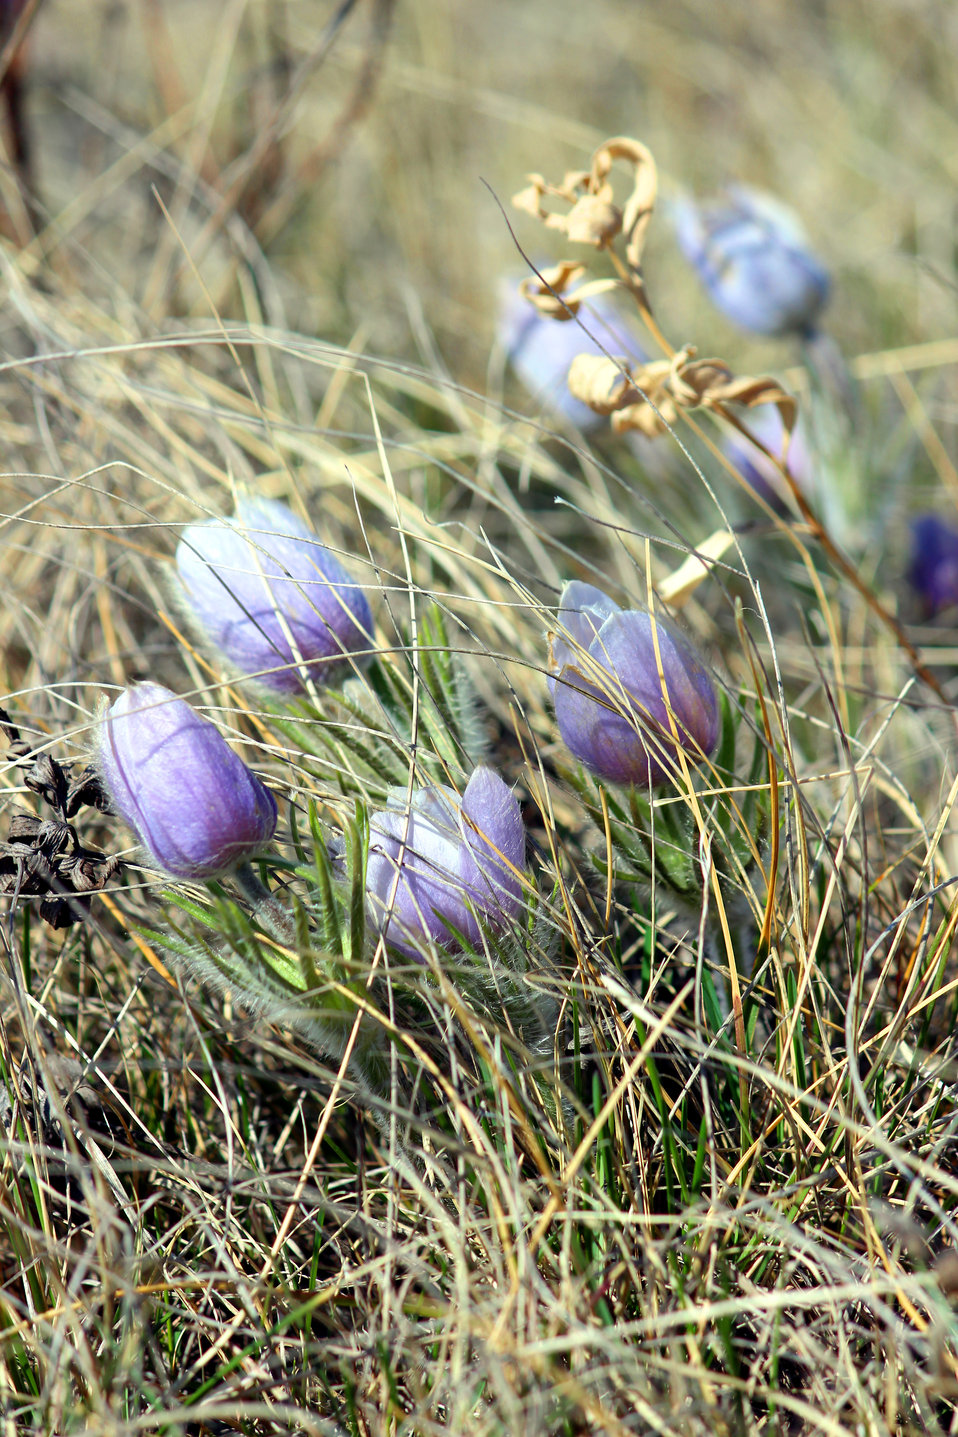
April Showers bring...May Flowers!

The pasqueflower (or May flower or crocus, among other names) is a species native to the northern U.S. and Canada. It is usually found only on sod that has never been broken. It is one of the earliest bloomers, and shows up as daubs of pale purple against the yellow and browns of the grasses in April and early May in North Dakota. These were found on the North Brinkman WPA in the Kulm Wetland Management District.